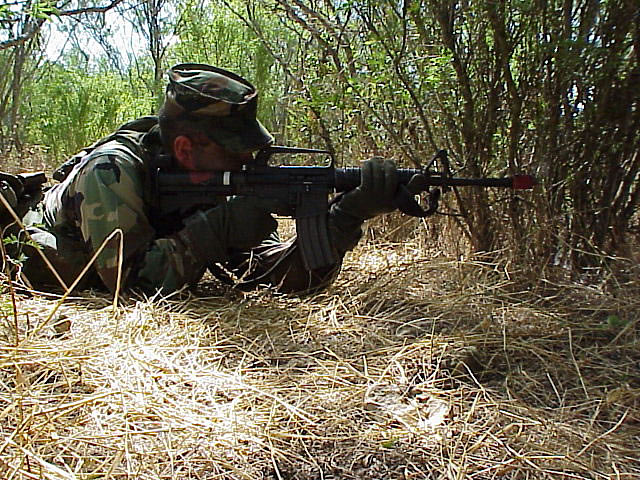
Kevin Seiler -- Southwest Region

Kevin Seiler, a Special Agent in Houston, Texas, served in the Air Force and is currently a major in the USAF Reserves.